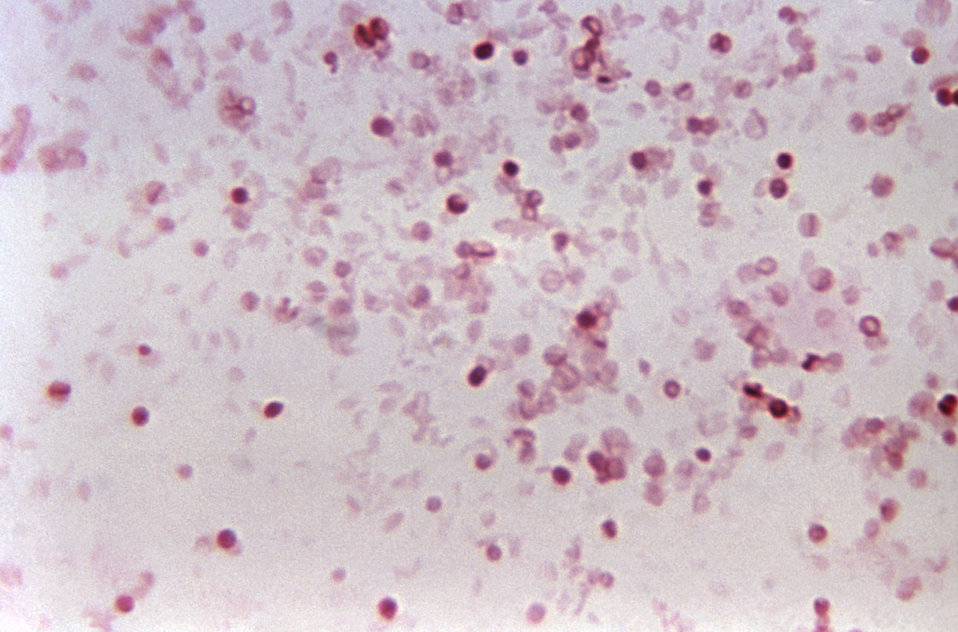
This micrograph depicts the gram-negative bacterium, Fusobacterium necrophorum cultured in blood agar for 48 hours.